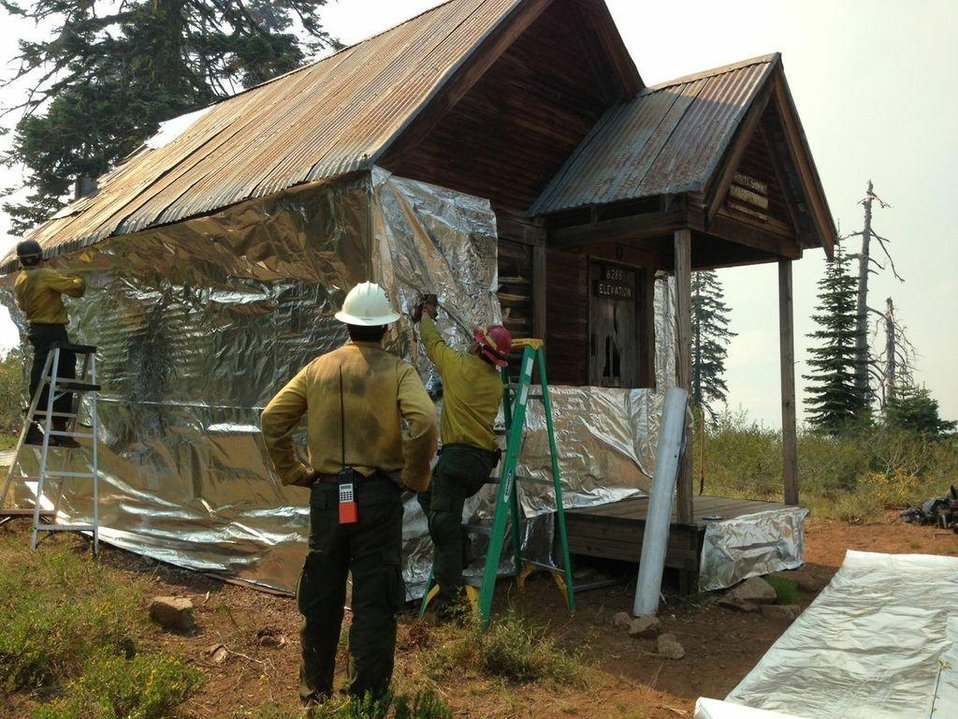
Fire crews wrap the historic Trinity Summit Guard Station at Six Rivers National Forest in aluminized heat wrap to protect it from the Corral Complex Fire. The Corral Complex Fire in the Six Rivers National Forest near the Trinity Alps Wilderness area in California began on Aug. 10, 2013 by lightning and has consumed approximately 4, 450 acres.